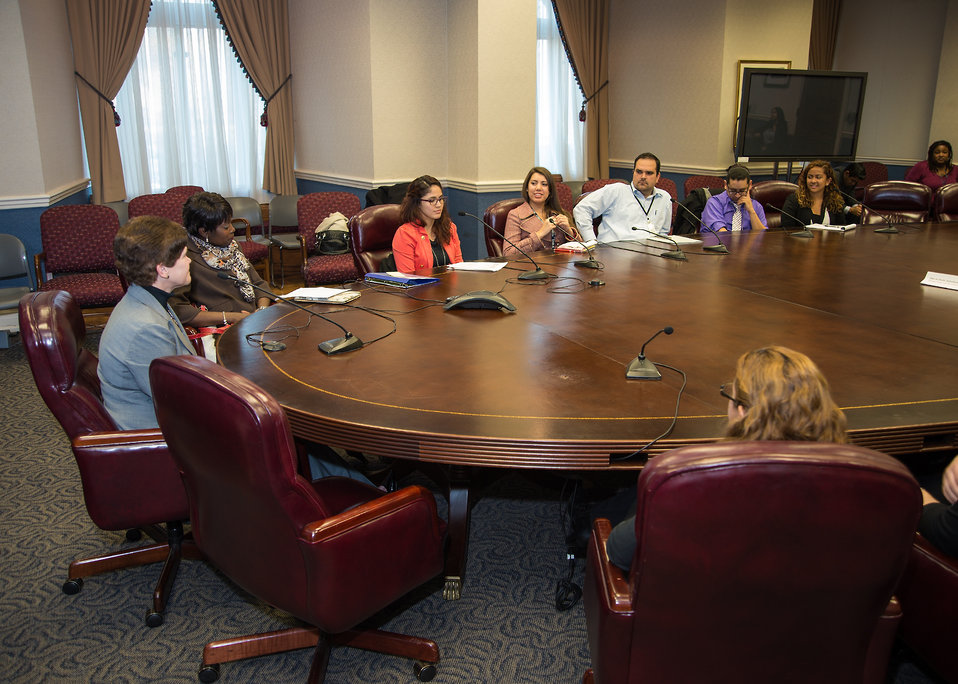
Deputy Secretary Krysta Harden listens to questions posed by students interning at USDA for the Fall 2013 semester through the Hispanic Association of Colleges and Universities (HACU) National Internship Program. This program is a partnership between the USDA and HACU that provides an excellent opportunity for the Department to identify highly qualified candidates for future employment. Tue. December 3, 2013 in Washington, D.C.